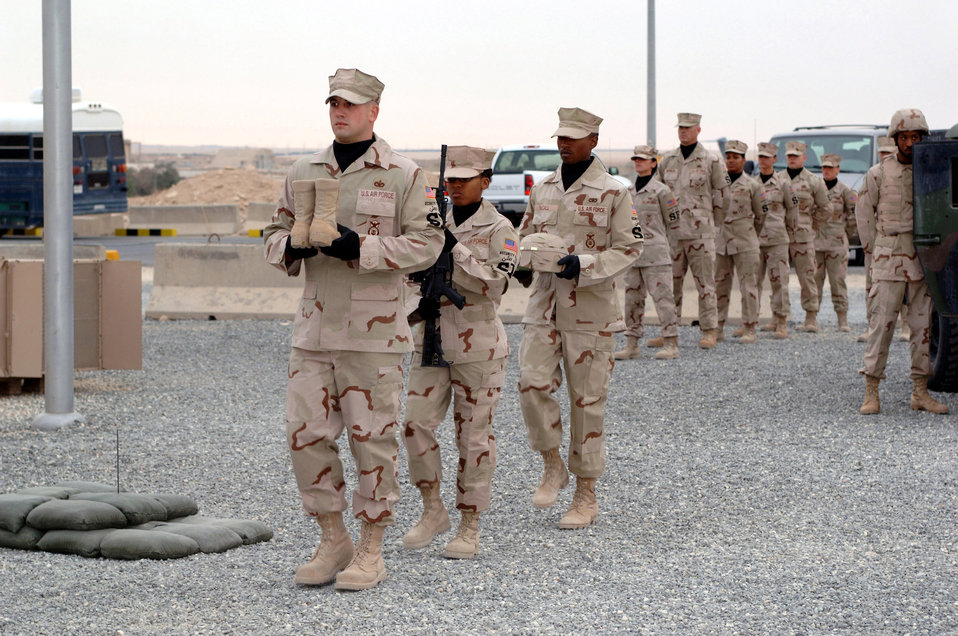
Remembrance ceremony

Members of the 386th Expeditionary Security Forces Squadron march toward a memorial site for Airman 1st Class Elizabeth Jacobson, who was killed while on a convoy near Camp Bucca, Iraq. Her vehicle was hit by an improvised explosive device Sept. 28, 2005. She was the first female Airman killed in the line of duty supporting Operation Iraqi Freedom. Senior Airman Nykita Stoudemire, deployed with Airman Jacobson last year, placed the M-4 assault rifle during the ceremony.